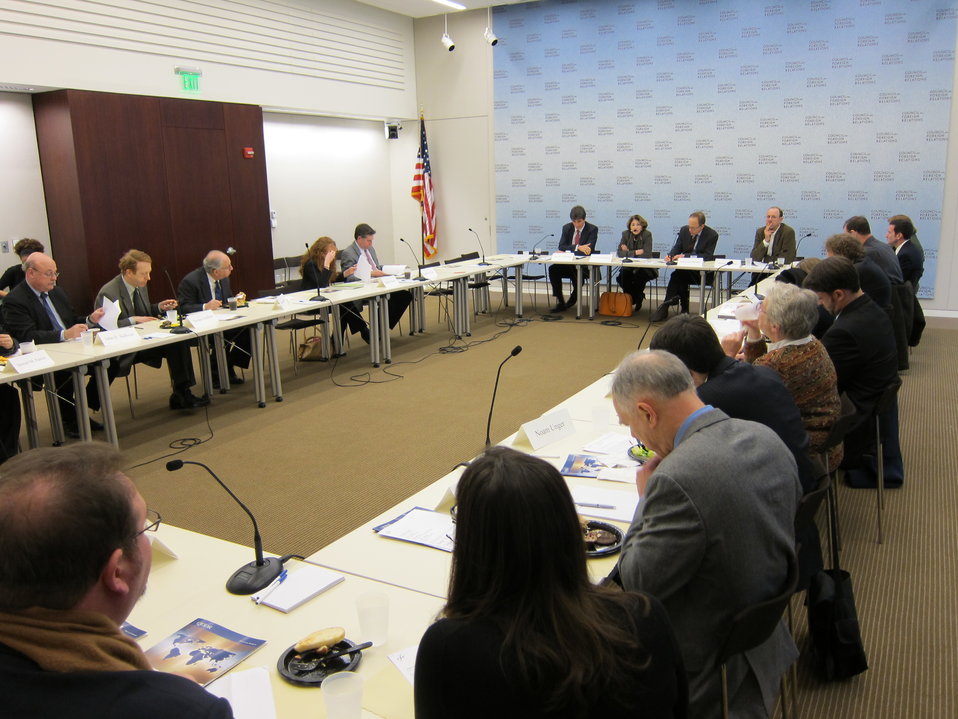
Assistant Secretary Fernandez Participates in a Roundtable Discussion

Assistant Secretary of State for Economic, Energy and Business Affairs Jose Fernandez participates in a roundtable discussion at the Council on Foreign Relations (CFR) in Washington, D.C., on January 12, 2011.